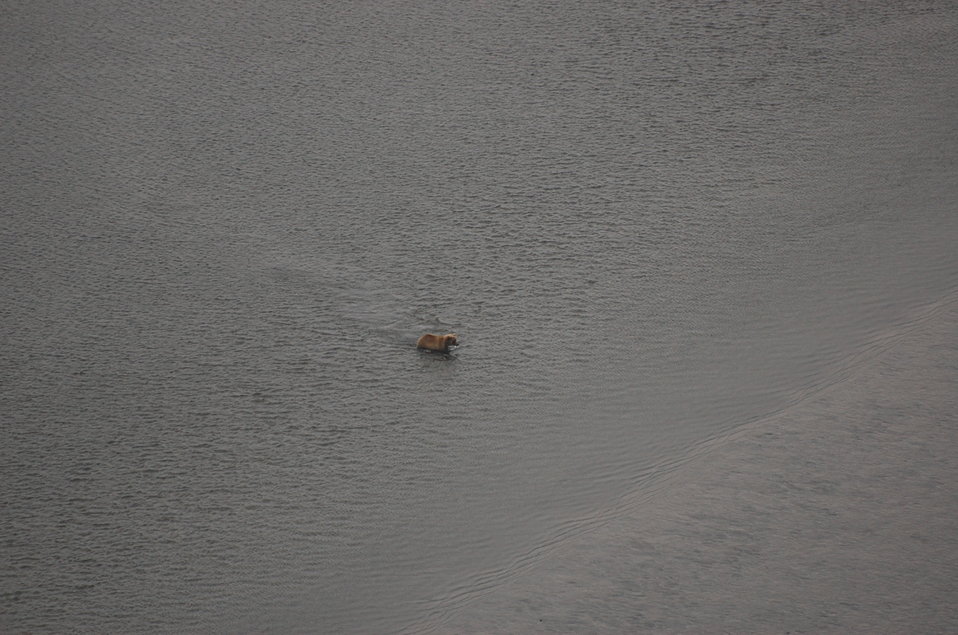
Brown bear in Izembek Lagoon

Fishing in Moffet Lagoon, Izembek National Wildlife Refuge